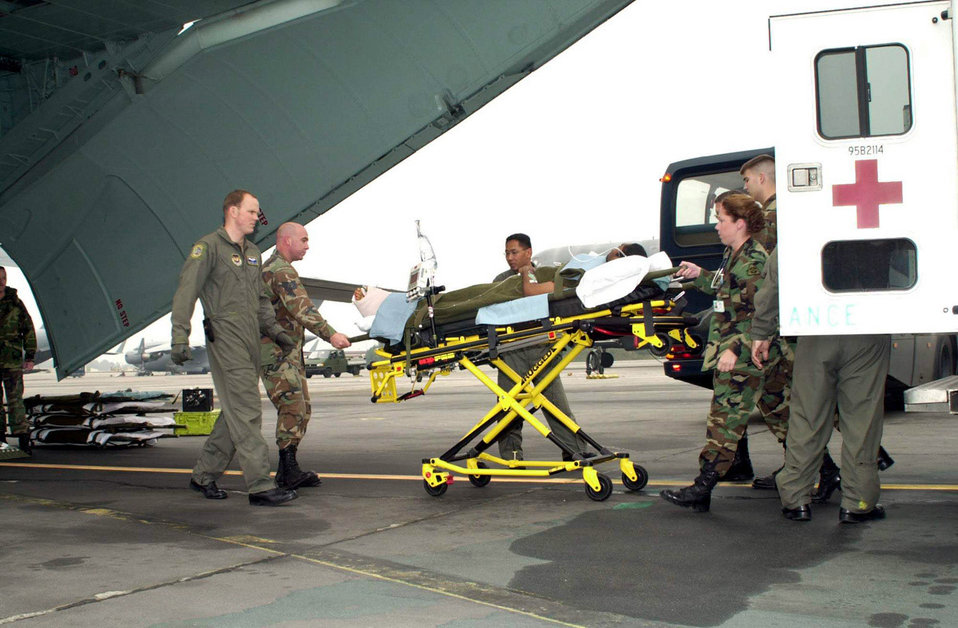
USS Cole Terrorist Attack

RAMSTEiN AIR BASE, Germany -- A severely injured sailor from the USS Cole is taken from an ambulance at Ramstein Air Base, Germany, Oct. 15, 2000 and loaded aboard a C-141 Starlifter by medical personnel from Landstuhl Regional Medical Center. The injured sailor is being transported to the USS Cole's homeport at the Norfolk Naval Air Station, Va.